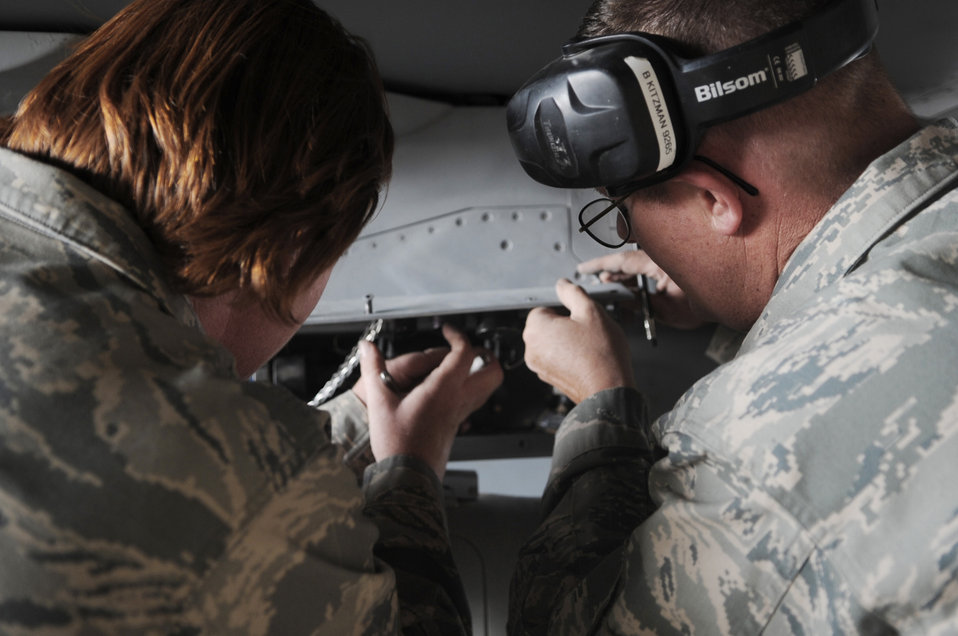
Weapons loaders arm jets for the fight

Staff Sgt. Michelle Torrey and Tech. Sgt. Brett Kitzman check connections after loading munitions onto an F-16 Fighting Falcon June 29 at Joint Base Balad, Iraq. Sergeants Torrey and Kitzman are 332nd Expeditionary Aircraft Maintenance Squadron weapons loaders and deployed from Buckley Air Force Base, Colo. Sergeant Torrey is a native of Greeley, Colo., and Sergeant Kitzman is from Aurora, Colo.